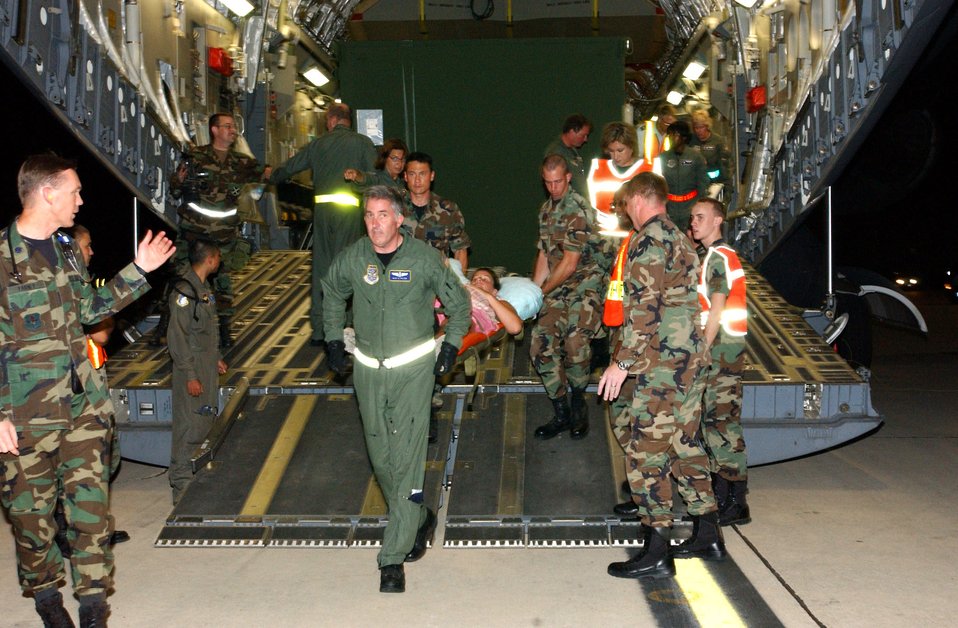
Hurricane Katrina medical evacuations

LACKLAND AIR FORCE BASE, Texas -- Medical patients evacuated from Keesler Air Force Base, Miss., in the wake of Hurricane Katrina are unloaded from a C-17 Globemaster III here Aug. 30. Their medical care will be continued at Wilford Hall Medical Center. The C-17 and aircrew are from the Mississippi Air National Guard.